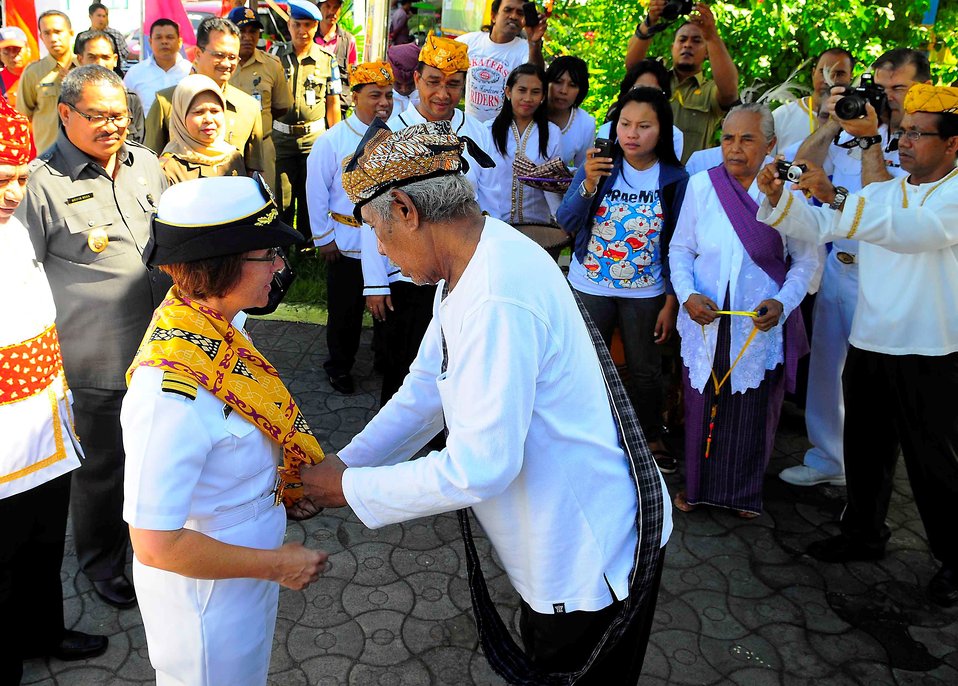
Pacific Partnership 2010 Commander Capt. Lisa M. Franchetti receives a cultural garment from an Indonesian official during a ceremony marking the beginning of operations by Military Sealift Command hospital ship USNS Mercy (T-AH 19) crewmembers in support of Pacific Partnership 2010 in Tobelo, Indonesia, on July 13, 2010. Pacific Partnership 2010 is the fifth in a series of annual U.S. Pacific Fleet humanitarian and civic assistance endeavors to strengthen regional partnerships.